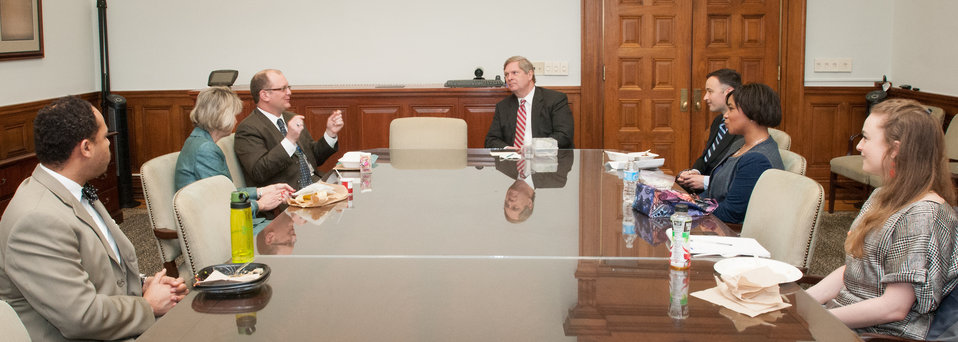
(From opposite end of table from Agriculture Secretary Tom Vilsack, in darksuit and red tie), U.S. Department of Agriculture (USDA), Farm Service Agency Confidential Assistant Leigh Allen; Food, Nutrition and Consumer Services (FNCS) Special Assistant to the Under Secretary Brenda Lisi; Office of Ethics Branch Chief Ed Peterman, Secretary Tom Vilsack, Foreign Agricultural Service (FAS) Senior Advisor Patrick Kerrigan; Civil Rights Adjudicator Cinnamon Butler; Rural Development Rural Utilities Service (RUS), Special Assistant Sara Buettner-Connelly, and Chief of Staff Krysta Harden meet to discuss the roles they play within the department, during a Brown Bag Lunch that Secretary Vilsack periodically has with employees, in his conference room, on Tuesday, April 9, 2013, in Washington, D.C.